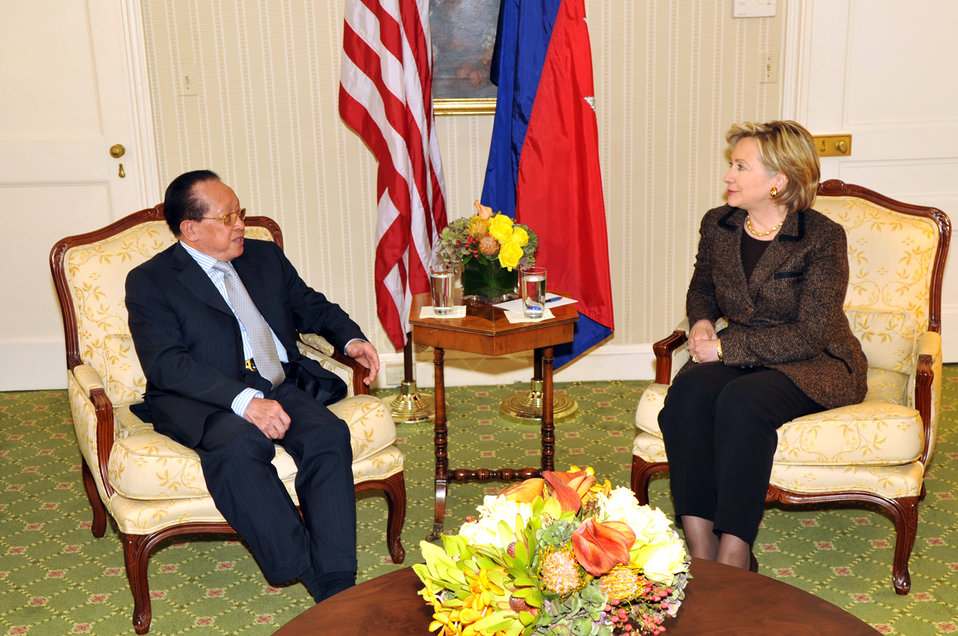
UNGA 2009: Secretary Clinton Meets With Cambodia Foreign Minister

U.S. Secretary of State Hillary Rodham Clinton meets with Cambodian Deputy Prime Minister and Foreign Minister Hor Namhong at the Waldorf Astoria hotel in New York City, New York September 28, 2009.